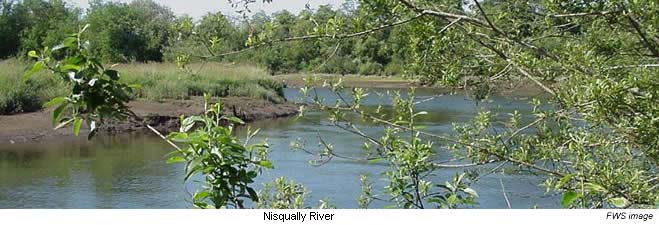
Nisqually River in the Nisqually Wildlife Refuge.